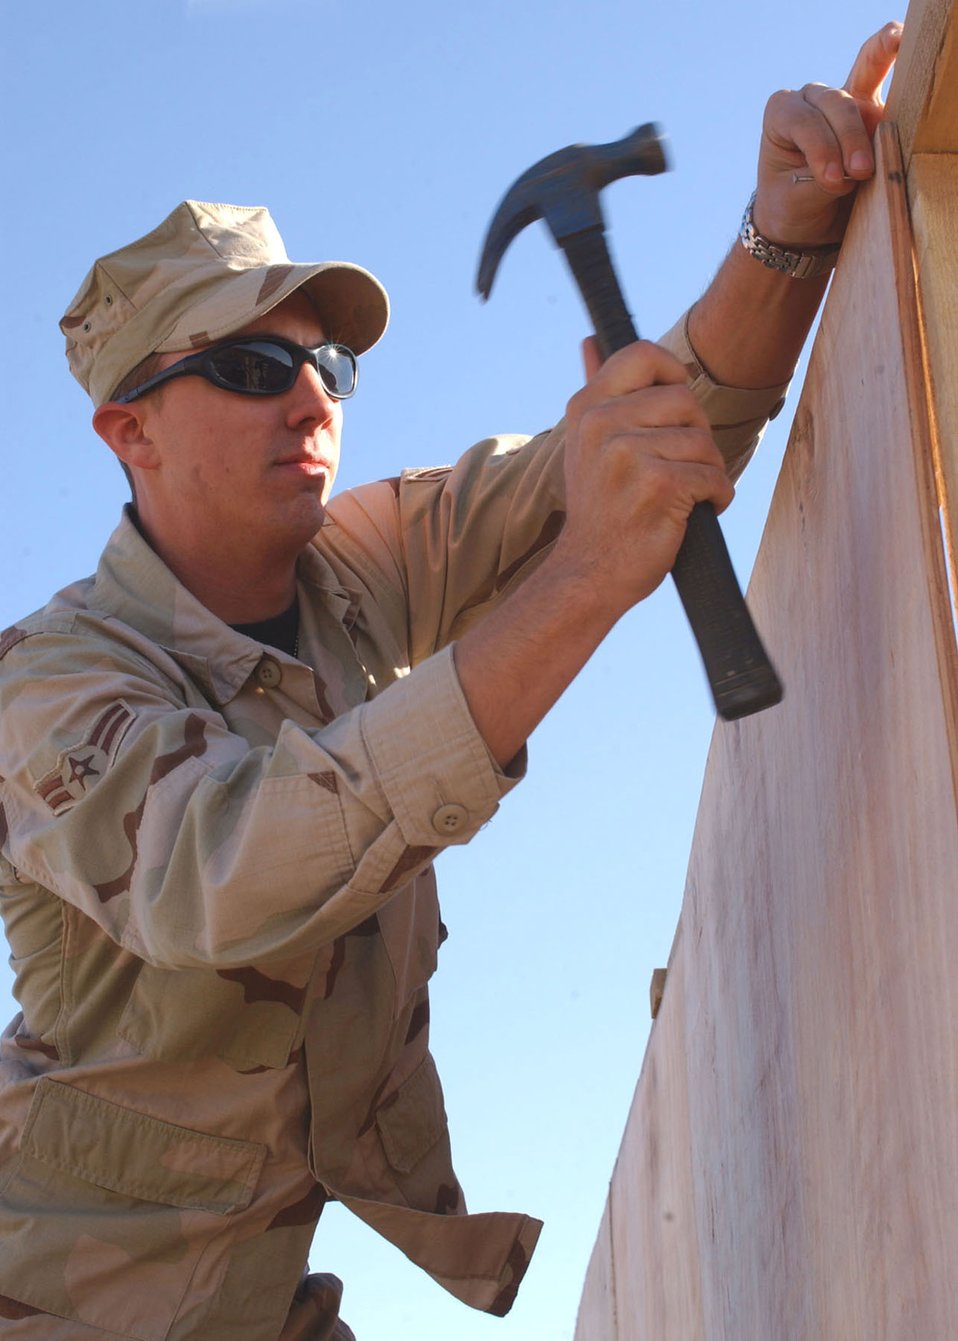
Airmen build future with present mission

Airman 1st Class Christopher Birkland hammers nails for the exterior wall of an office building being built at Camp Liberty in Iraq Dec. 28. Airman Birkland is a civil engineer with the 1st Special Operations Civil Engineer Squadron at Hurlburt Field, Fla.